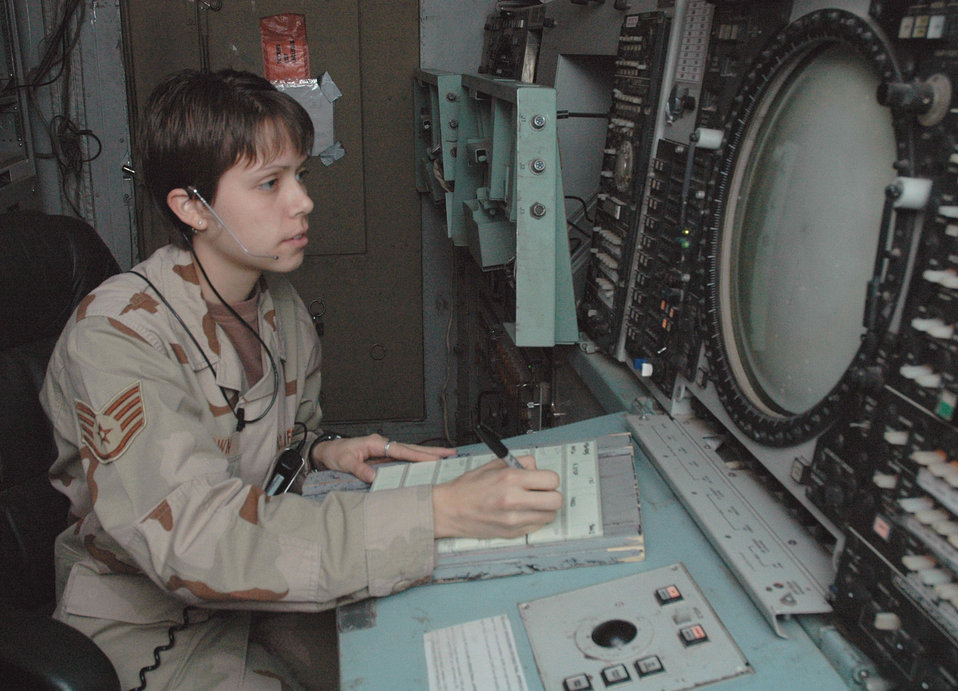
Serving through the season: Staff Sgt. April Brown

Staff Sgt. April Brown is an air traffic control watch supervisor for the 506th Expeditionary Operations Support Squadron at Kirkuk Air Base, Iraq.